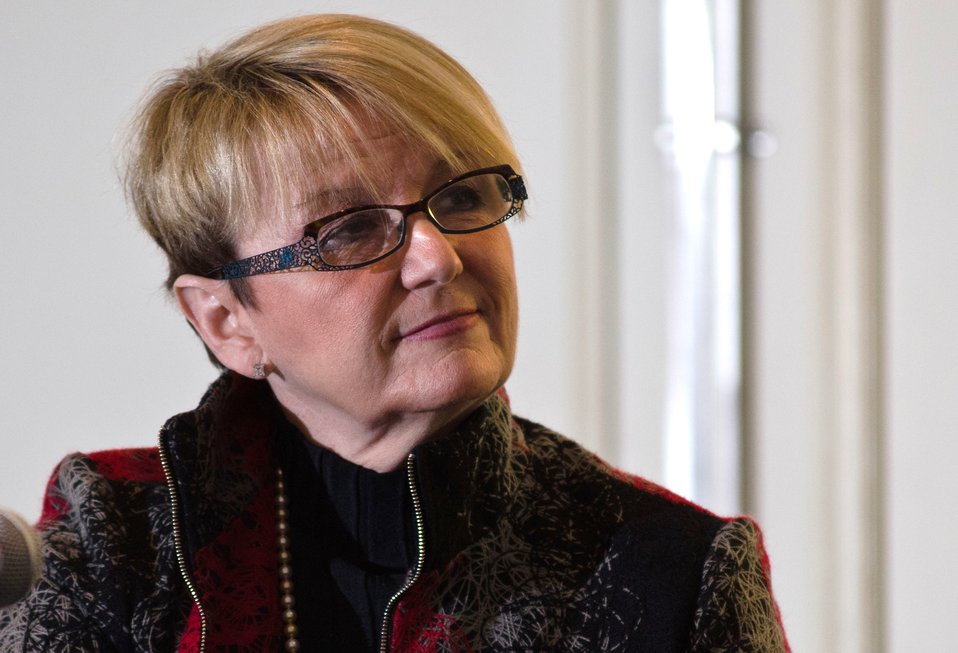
Baylor College of Medicine's Dr. Debbie Thompson spoke at the U.S. Department of Agriculture (USDA) 2013 Agricultural Outlook Forum, held at the Crystal Gateway Marriott Hotel, Arlington, Virginia on Thursday, Feb. 21, 2013. This annual Forum brings together producers, policymakers, business, government, and industry leaders to meet, exchange ideas, and discuss timely agriculture issues.